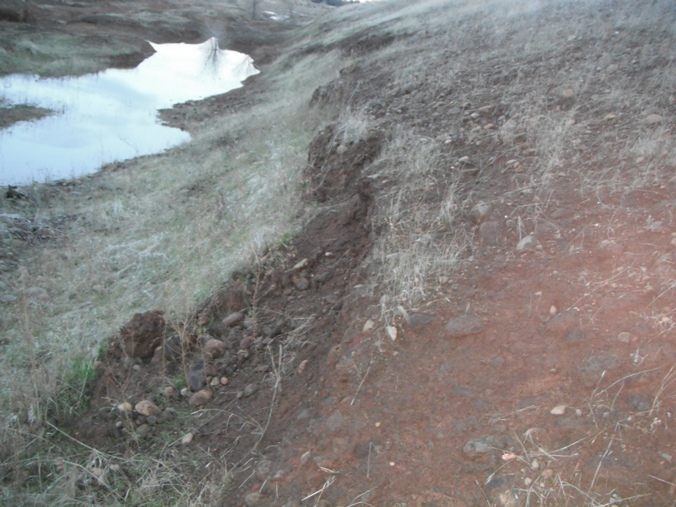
Erosion of a Chico-area levee

Erosion in the Chico, Calif., area, shown during a levee inspection in December 2010. The U.S. Army Corps of Engineers inspects levees in its Rehabilitation and Inspection Program to ensure levees don’t pose an unacceptable risk to lives and to provide levee managers and residents with detailed information on the condition of levees to help them make informed decisions about safety.